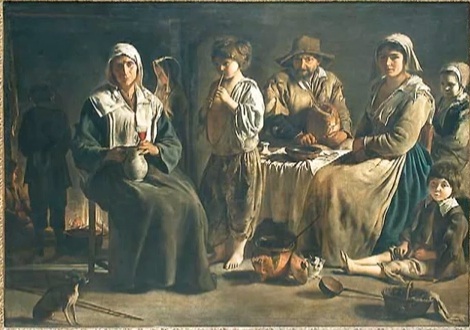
Antoine or Louis Le Nain - Peasant family in an interior - Louvre